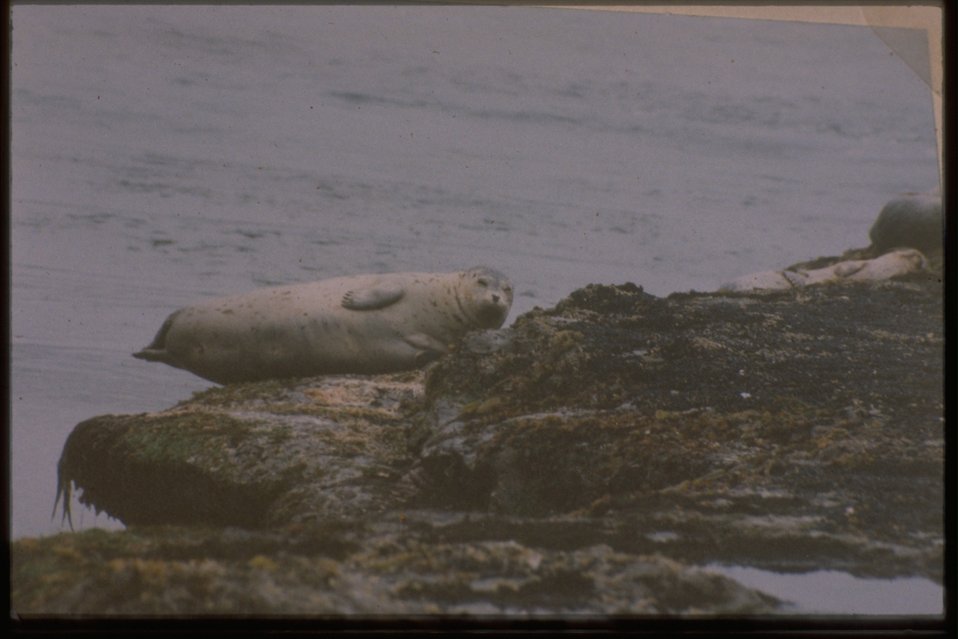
Pacific Harbor Seal on Seal Island at Yaquina Head Outstanding Natural Area.